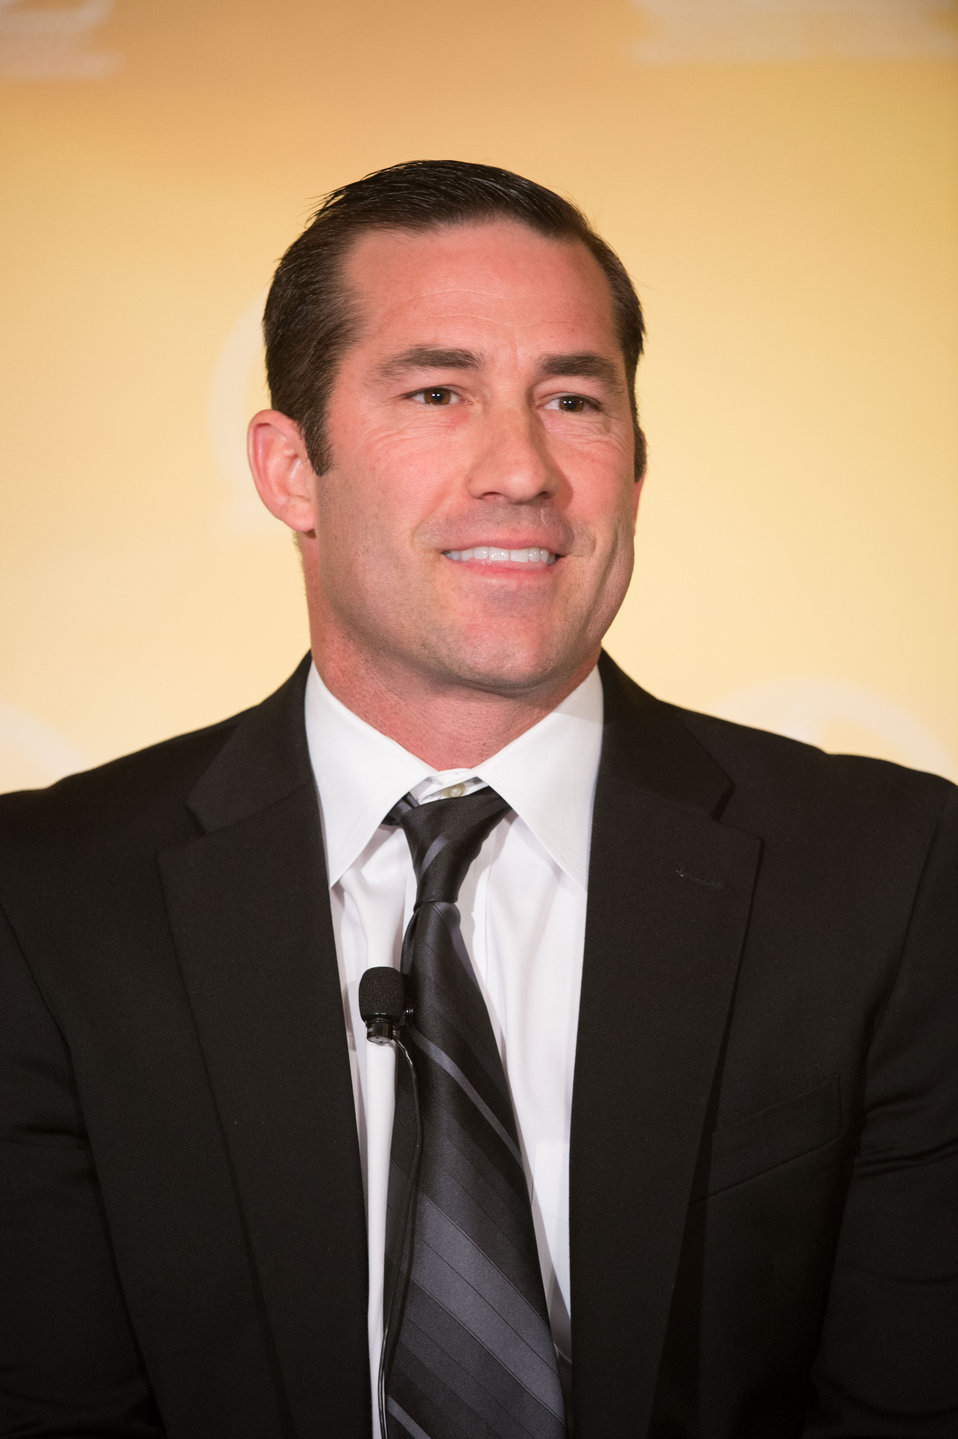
Young Farmers - Unlimited Opportunities panelist National Outstanding Young Farmer awardee Greg Wegis at the 2014 Agricultural Outlook Forum in Arlington, VA., on Thursday, Feb. 20, 2014. The U.S. Department of Agriculture's (USDA) annual Agricultural Outlook Forum brings together the agricultural community to discuss policy, trade, science, rural development, and the economic outlook for the coming year. The Forum also focuses on forestry, health and nutrition issues, and the changing dynamics and face of rural America.USDA photo by Bob Nichols.